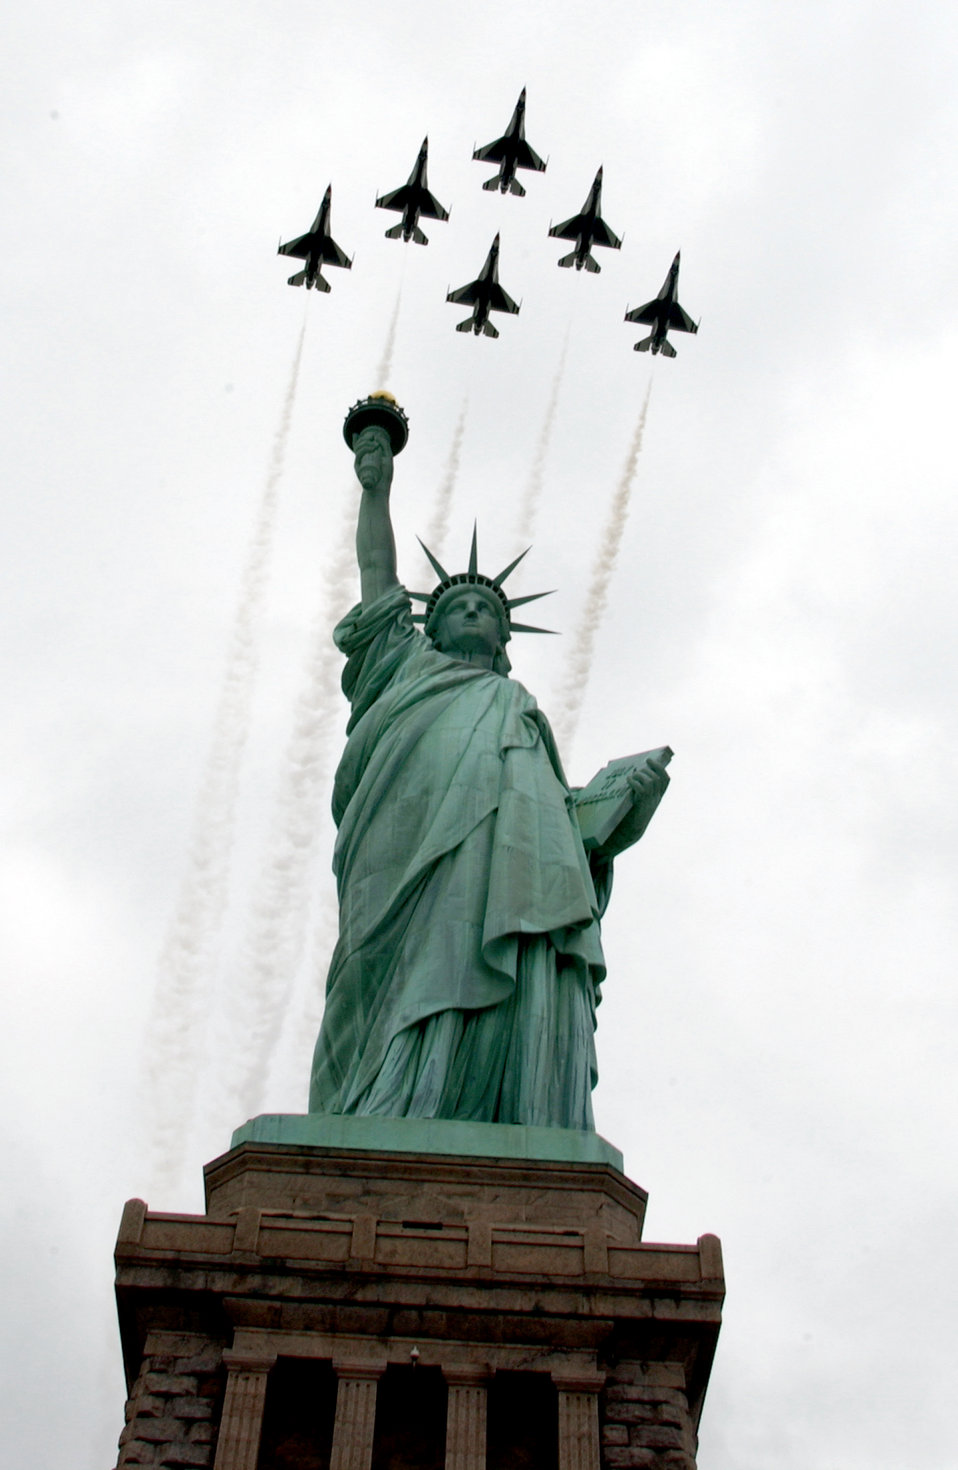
Liberty Birds

NEW YORK -- Six F-16 Fighting Falcons with the U.S. Air Force Thunderbirds aerial demonstration team fly in formation over the Statue of Liberty before an air show May 26.